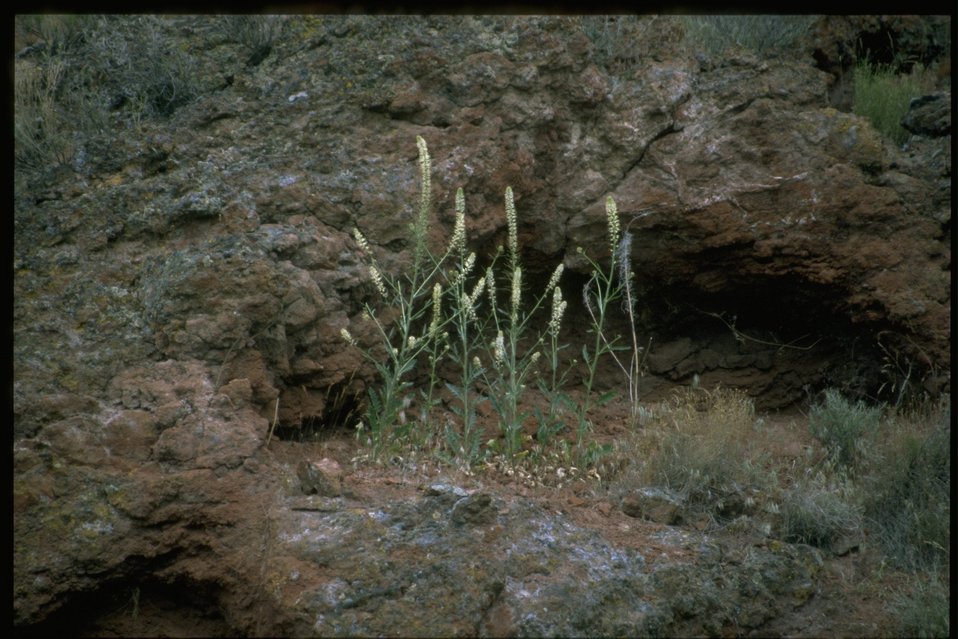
Farshot of Thelypodium habitat.